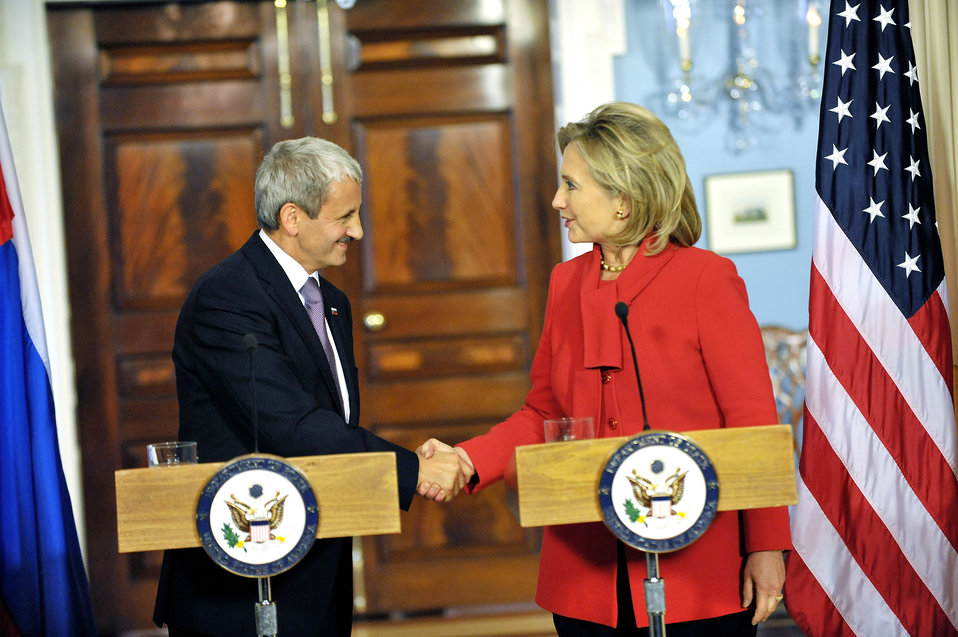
Secretary Clinton Shakes Hands With Slovakian Foreign Minister Dzurinda

U.S. Secretary of State Hillary Rodham shakes hands with Slovakian Foreign Minister Mikulas Dzurinda at the U.S. Department of State in Washington, D.C., on October 19, 2010.